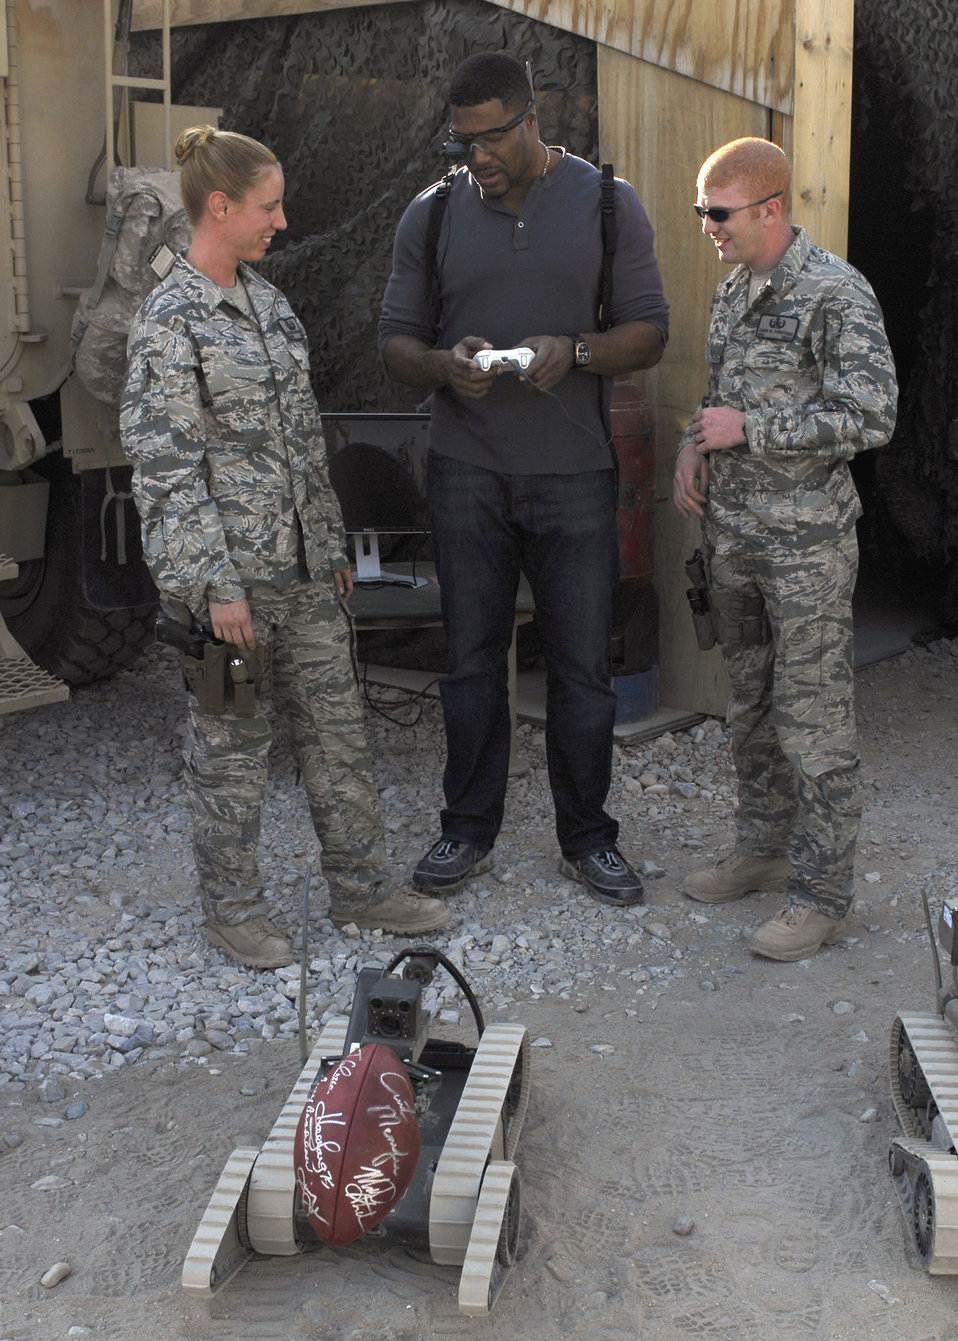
'Fox NFL Sunday' team visits Bagram

Michael Strahan, an announcer with